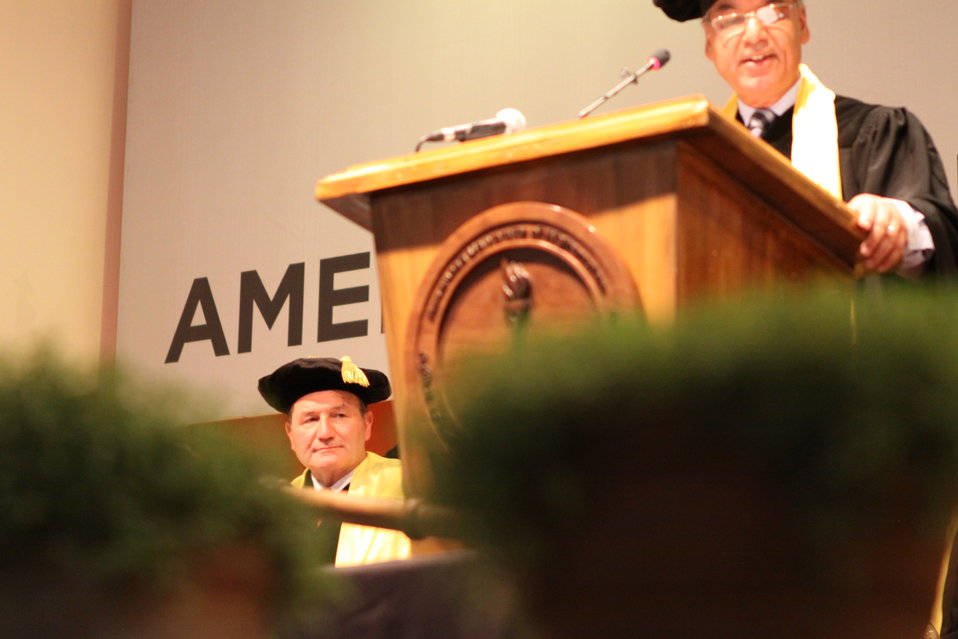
100526 AUAF Graduation 165